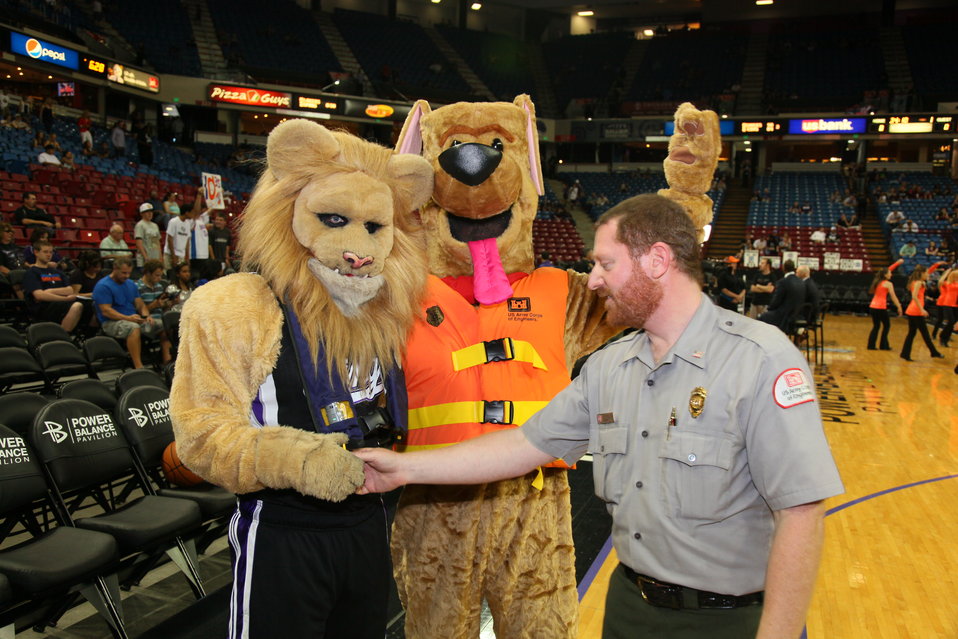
Water safety with the Kings

Sacramento Kings mascot Slamson (left) learns how to use an inflatable life jacket from U.S. Army Corps of Engineers Sacramento District park ranger Jonathan Friedman at Power Balance Pavilion in Sacramento, Calif., April 20, 2012. Corps mascot Bobber the Water Safety Dog joined Friedman at the Kings’ game against the Oklahoma City Thunder to spread the word on how to stay safe on the water this summer.